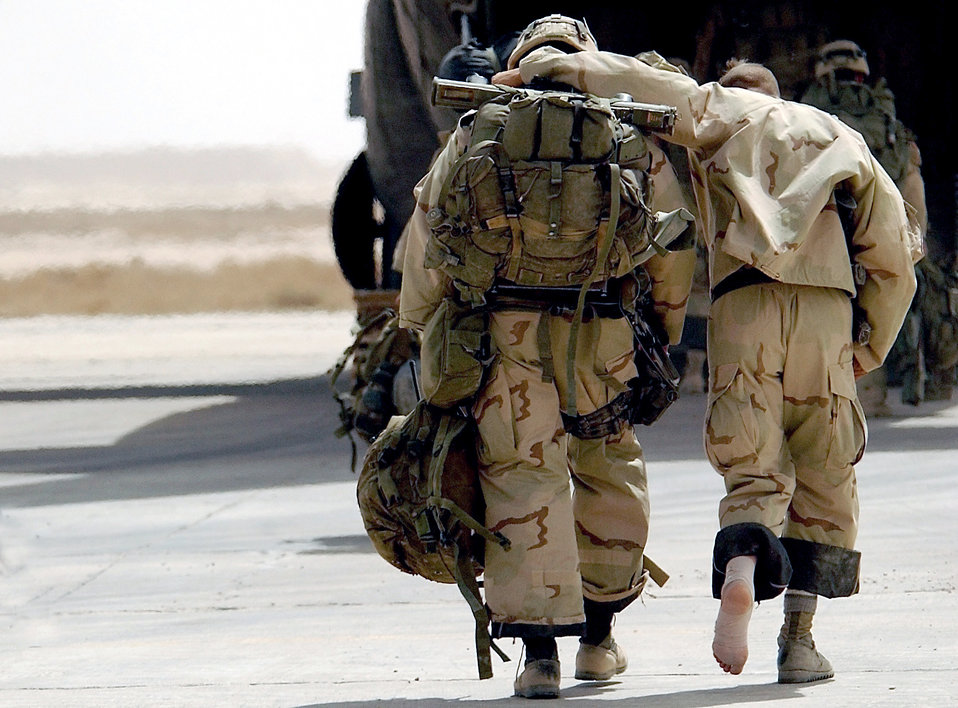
A little help from my friend

OPERATION IRAQI FREEDOM -- U.S. Army soldiers board an Air Force C-130 Hercules at a forward-deployed location in the Arabian Gulf region April 4. Coalition air forces have transported more than 51,000 passengers and moved about 38,000 short tons of cargo from March 19 to April 4. More than 150 servicemembers have been wounded and 85 killed in battle during Operation Iraqi Freedom.